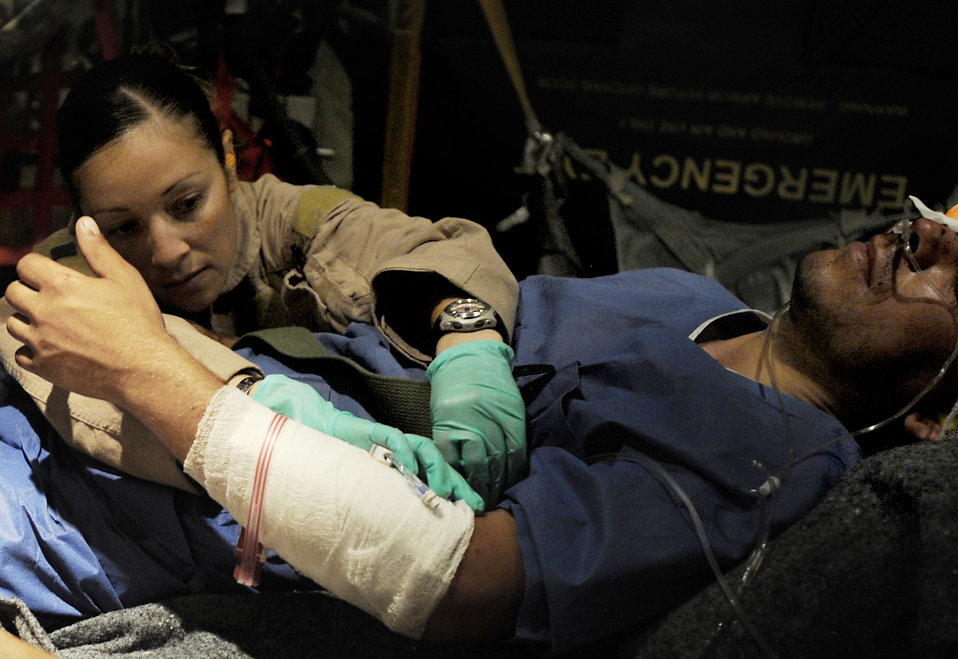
Flying hospital staff gives wounded fighting chance

Senior Airman Maria Baird provides care to a patient during an aeromedical evacuation mission to transport patients July 19 from Kandahar Airfield, Afghanistan, to Bagram Airfield, Afghanistan. Airman Baird is an aeromedical technician assigned to the 451st Expeditionary Aeromedical Evacuation Flight.